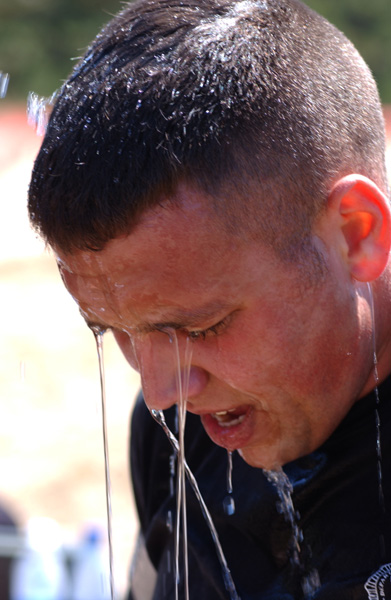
Sweet victory

VANDENBERG AIR FORCE BASE, Calif. -- 2nd Lt. Jesse Goens takes a breath after finishing the obstacle course at Guardian Challenge here May 5. Guardian Challenge, the world's premier space and missile competition, is an annual four-day event. It tests the wartime readiness of Air Force Space Command's Airmen in spacelift, ICBM operations, communications, maintenance, helicopter operations, security forces and food preparation. Lieutenant Goens is assigned to the 90th Space Wing at F.E. Warren Air Force Base, Wyo.